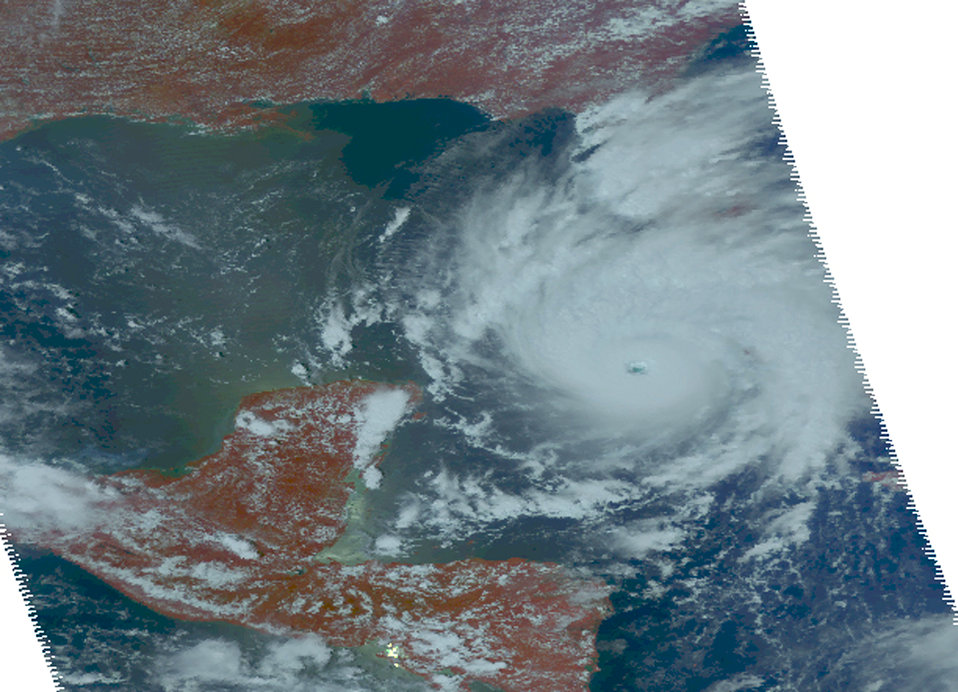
Where was Gustav on Sunday, August 31, 2008?At 8:00 a.m. EDT, Gustav's maximum sustained winds had decreased to near 120 mph, but Gustav was a category three hurricane on the Saffir-Simpson scale. Some re-strengthening was forecasted during the next 24 hours...and it was thought that Gustav could regain Category Four strength later on Sunday, or Sunday night.